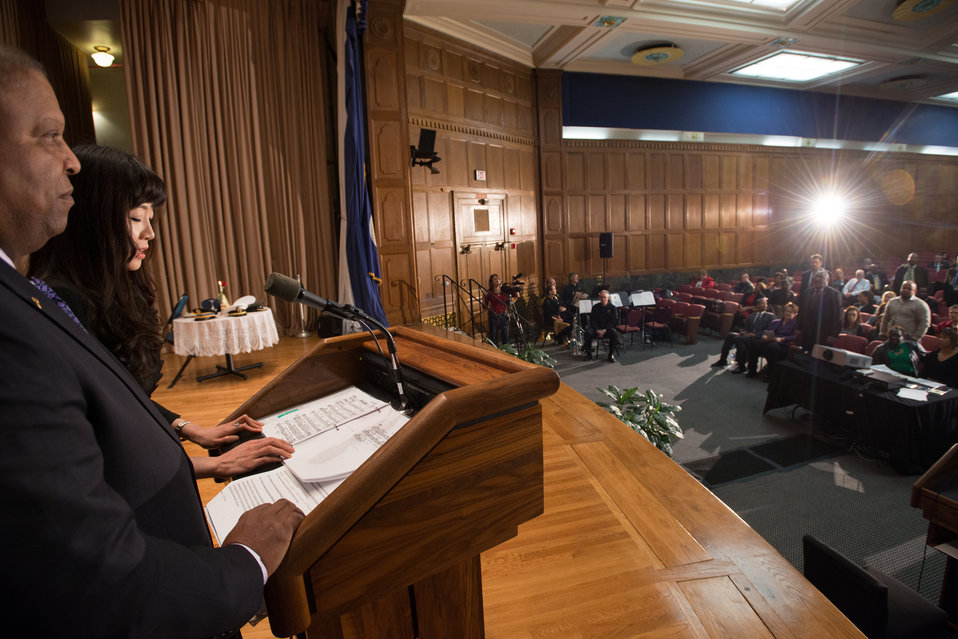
U.S. Department of Agriculture (USDA) Agricultural Marketing Service (AMS) Livestock, Poultry and Seed Division Associate Deputy Administrator and U.S. Marine Corps Lieutenant Colonel (retired) Douglas Keeler, left, moderates, and Soprano Amy Keesun Kwon sings the major Service songs of each of the Armed Services as U.S. Department of Agriculture (USDA) personnel who have served, or are serving in a Uniformed Armed Service are called by their Service to stand and be honored, during the 2013 USDA Veterans’ Day Observance, whose theme is “VALOR, COURAGE, SACRIFICE – HONORING ALL WHO SERVED,” in Washington, D.C., on Wednesday, November 20, 2013.